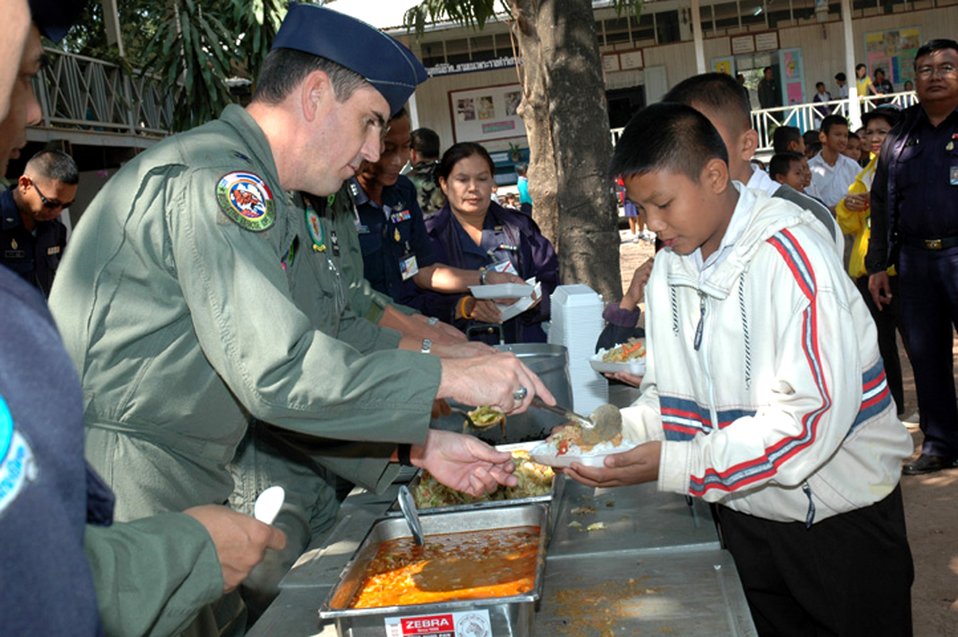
Cope Tiger participants provide humanitarian assistance

Col. Vincent Farrell serves a spoonful of curry to young Thai students from Ban Chaimongkon School Jan. 30 in Korat, Thailand. Military members from the United States, Thailand and Republic of Singapore took part in a humanitarian mission at the school as part of the multilateral exercise. Colonel Farrell is the 13th Air Force director of air, space and information operations and Air Force working group leader for Exercise Cope Tiger 2007.